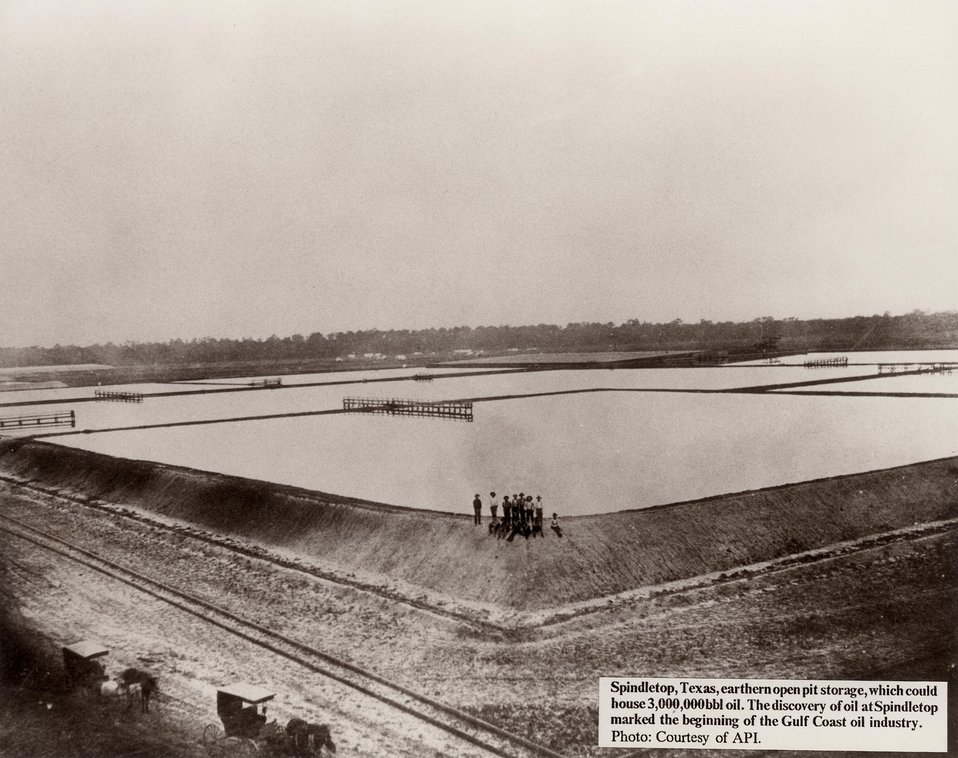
Spindletop, TX, earthen open pit storage, which could house 3,000,000 bbl oil.